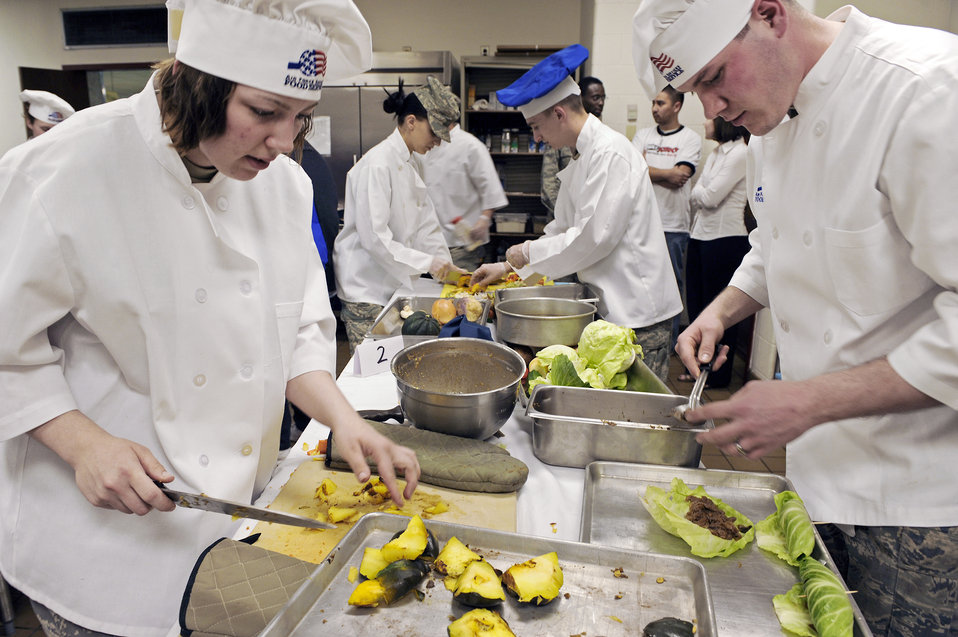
Ellsworth Airmen participate in cooking competition

Airman 1st Class Tiffany Lamb and Airman Resse Audette prepare an entr?e and dessert for the second annual